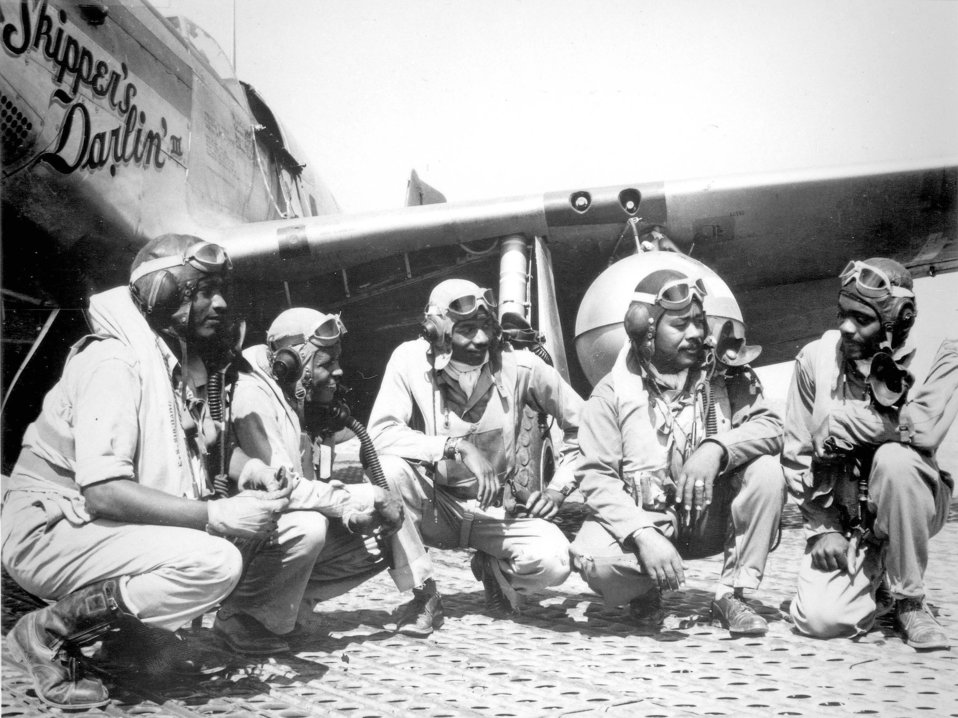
Pilots of the Tuskegee Airmen

1940's -- Pilots of the 332nd Fighter Group,